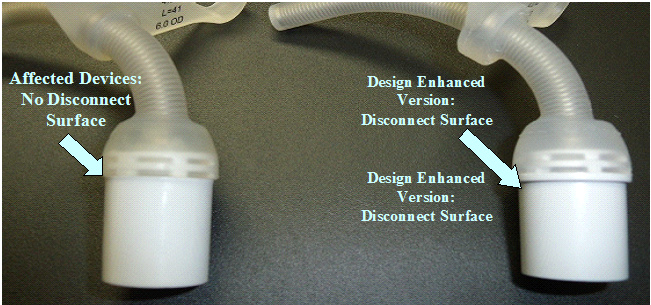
RECALLED - Tracheostomy tubes

December 22, 2011 - SSmiths Medical Issues Urgent Device Recall of Certain Bivona® Neonatal, Pediatric, and Flextend Tracheostomy Tubes.